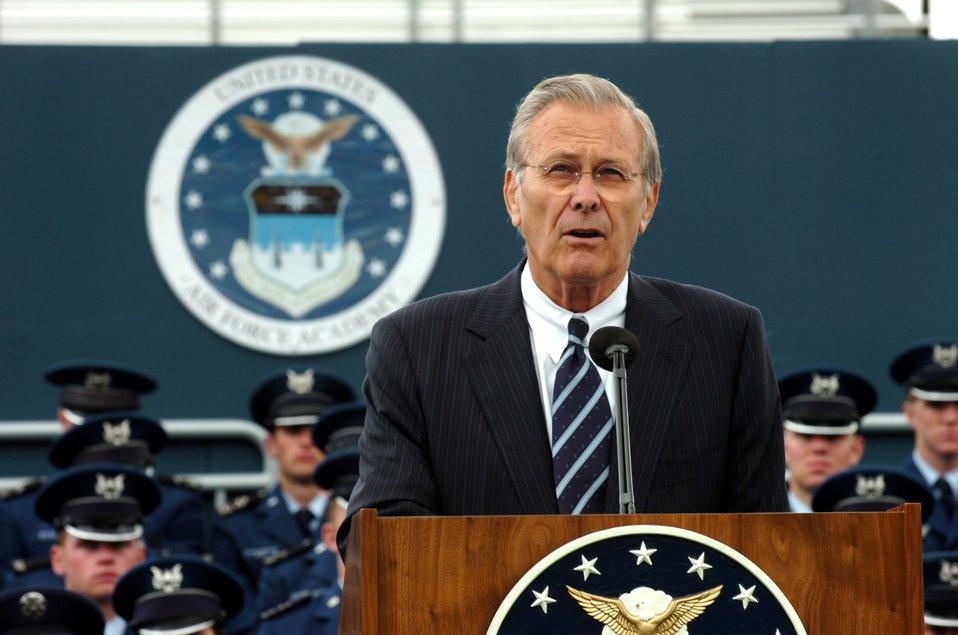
Academy graduates will help secure freedom, Rumsfeld says

Secretary of Defense Donald H. Rumsfeld delivers the commencement address to the 2006 graduating class of the U.S. Air Force Academy in Colorado Springs, Colo., on Wednesday, May 31, 2006.